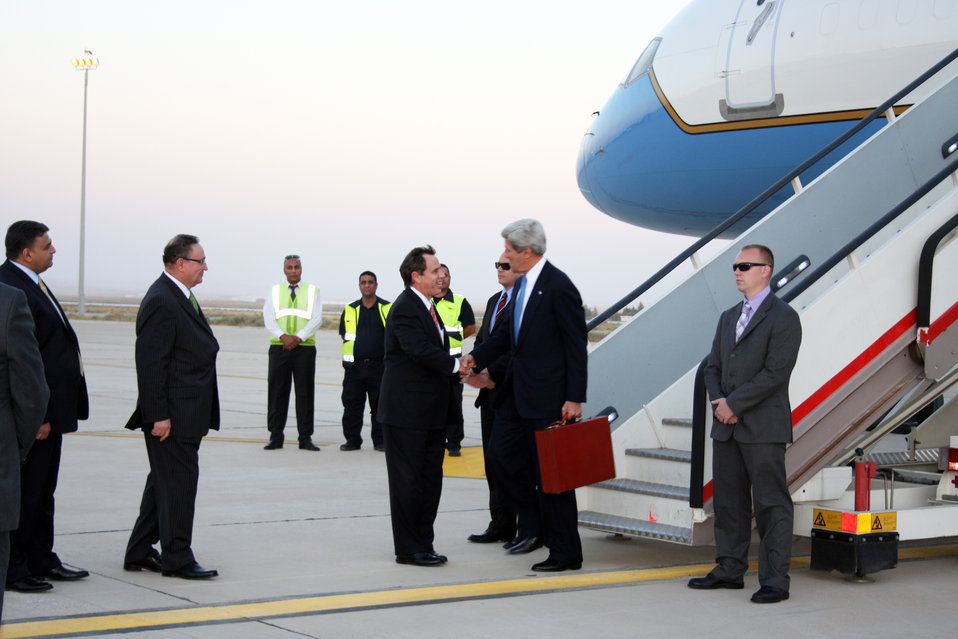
Secretary Kerry Is Greeted By Ambassador Jones Upon His Arrival in Amman, Jordan

U.S. Secretary of State John Kerry is greeted by U.S. Ambassador to Jordan Stuart E. Jones upon his arrival in Amman, Jordan, on June 26, 2013.